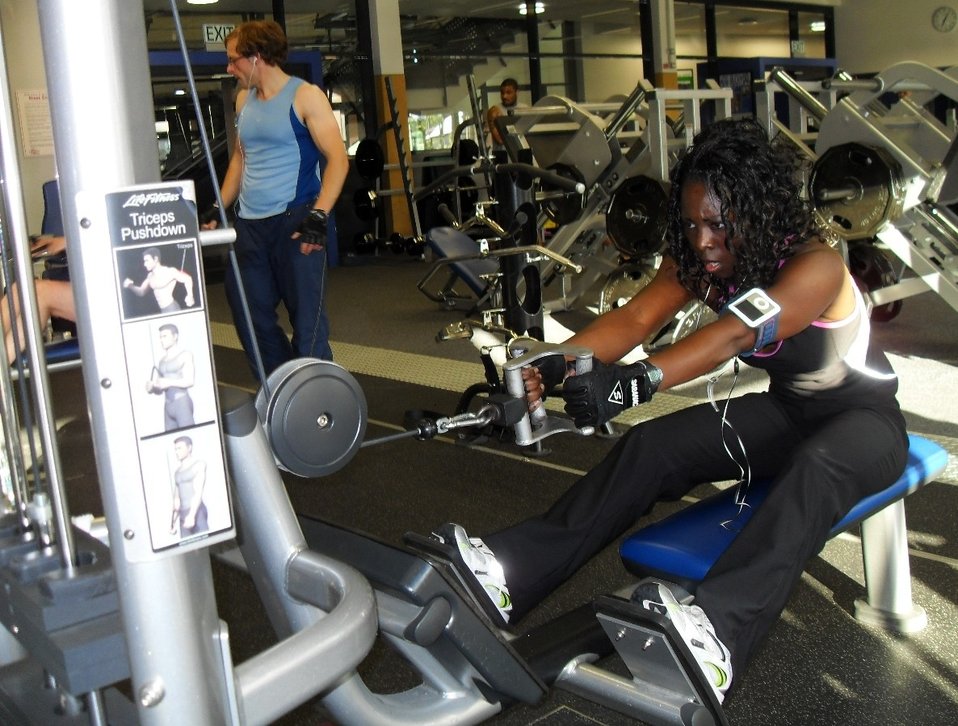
General's aide dedicated to her fitness regimen

Capt. Charlotta Blalock, aide to the commander of U.S. Air Forces in Europe, works out at the Southside Fitness Center on Ramstein Air Base, Germany.